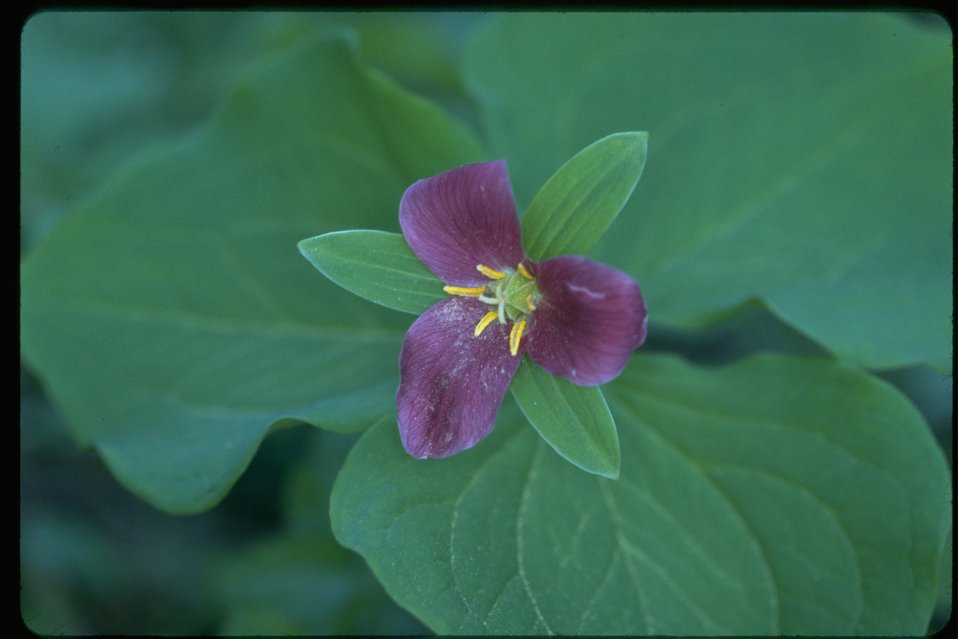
Medium shot of purple Trillium.